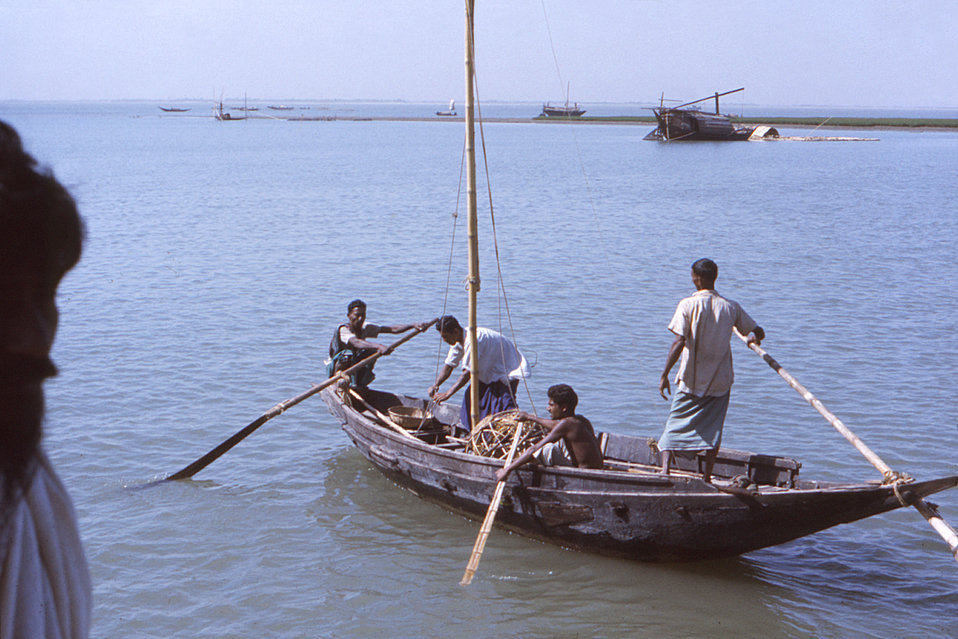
Photographed sometime in the early 1970s, during the worldwide smallpox eradication campaign, this image depicted four men in a small fishing boat traveling along an unidentified river in the country of Bangladesh.What should I know about smallpox?